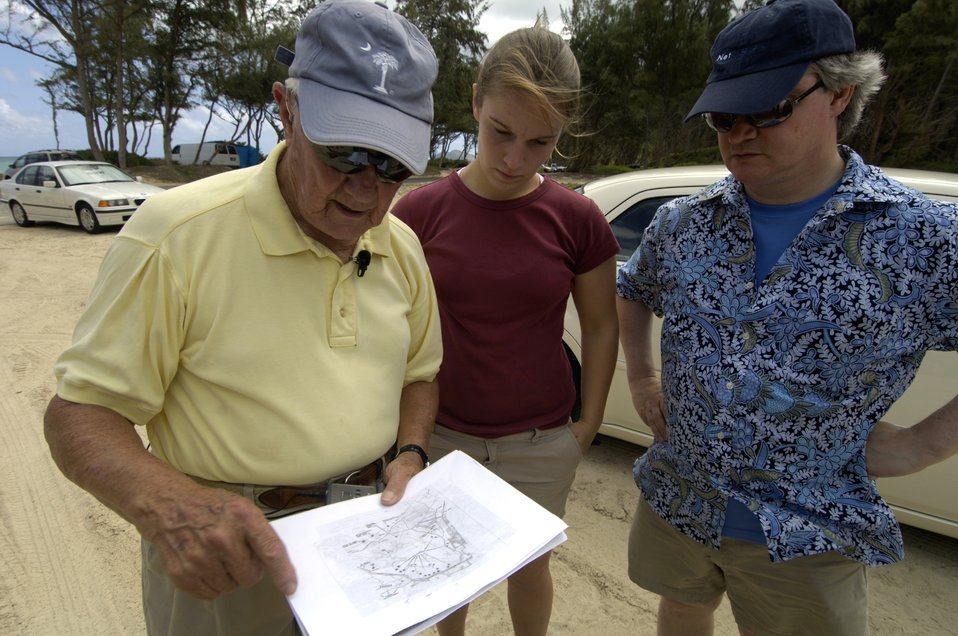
World War II veteran visits his past in Hawaii

Raymond Stehle; his granddaughter, Sheila McQueen; and son, Vincent Stehle, look over a historical map of Oahu at Bellows Air Force Station, Hawaii, Sept. 30. Mr. Stehle was stationed at Bellows Army Air Field when the Japanese attacked on Dec. 7, 1941.